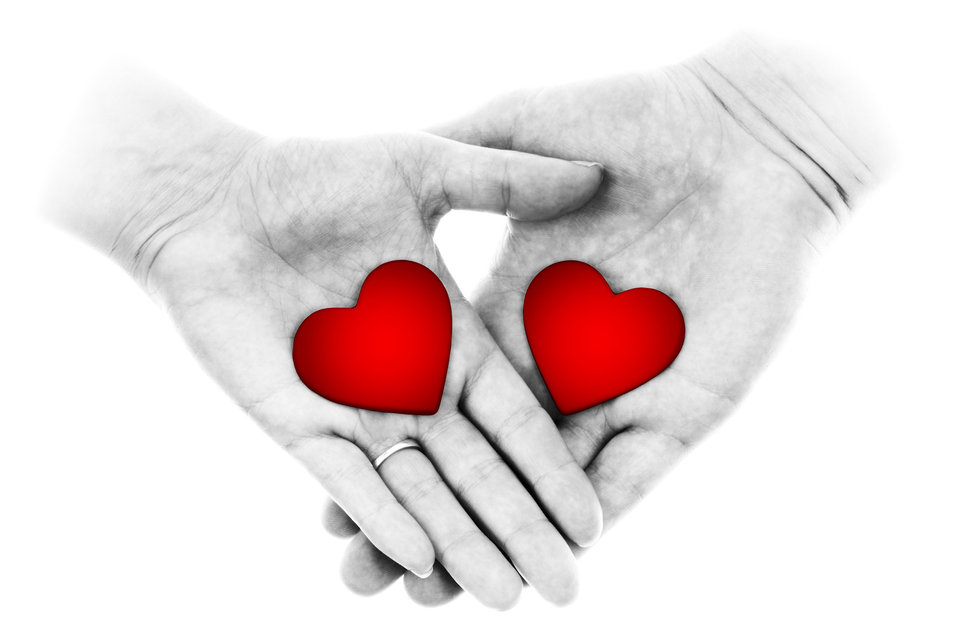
Hands with hearts

Black and white hands holding two red hearts on white background.